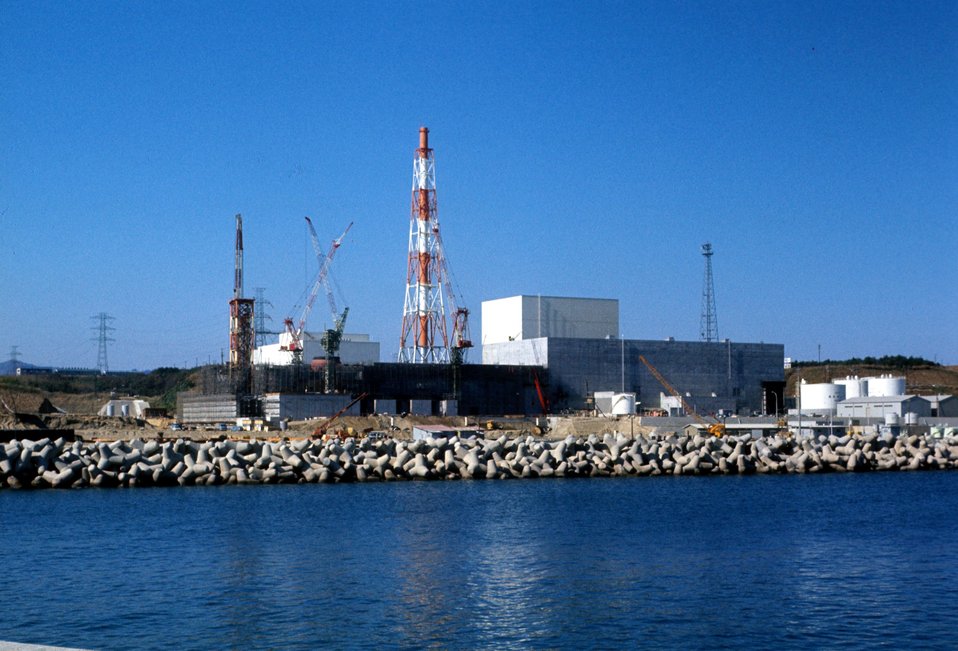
Tepco Nuclear Plant, Fukushina, Japan. c. 1970